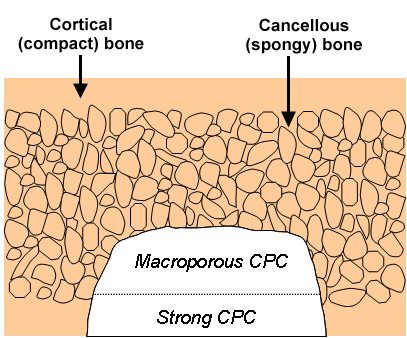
Layered Approach May Yield Stronger, More Successful Bone Implants

Schematic of cortical and cancellous bone, showing a cavity partially filled with a macroporous CPC paste, followed by a strong CPC paste. Macropores in the first layer allow bone cells to infuse, while the strong layer provides the needed early strength for the implant's survival. Once the new bone strengthens the implant, fibers in the strong layer dissolve to create macroporous channels for additional infusion of bone cells.